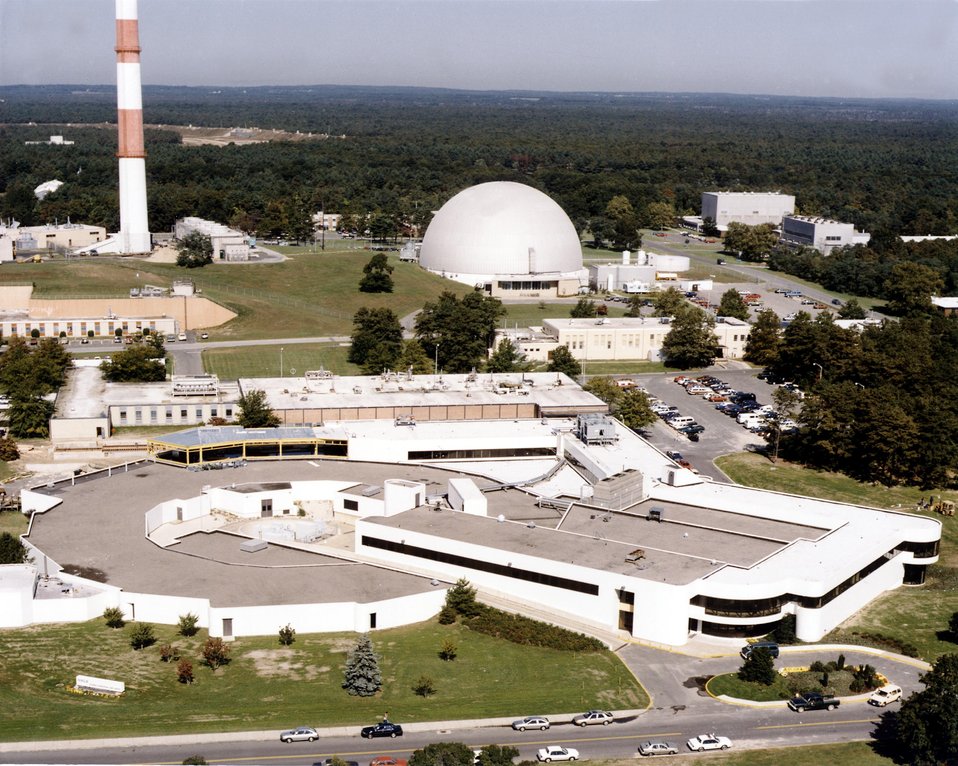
THE NATIONAL SYNCHROTRON LIGHT SOURCE (NSLS) IS BROOKHAVEN NATIONAL LABORATORY'S NEWEST MAJOR FACILITY.

THE NSLS IS THE WORLD'S MOST POWERFUL AND VERSATILE SOURCE OF SYNCHROTRON RADIATION. THE NSLS PROVIDES INTENSE BEAMS OFX-RAYS & ULTRAVIOLET LIGHT FOR USE BY SCIENTISTS FROM ALL OVER THE COUNTRY, FOR RESEARCH IN PHYSICS, CHEMISTRY, BIOLOGY AND VARIOUS TECHNOLOGIES.